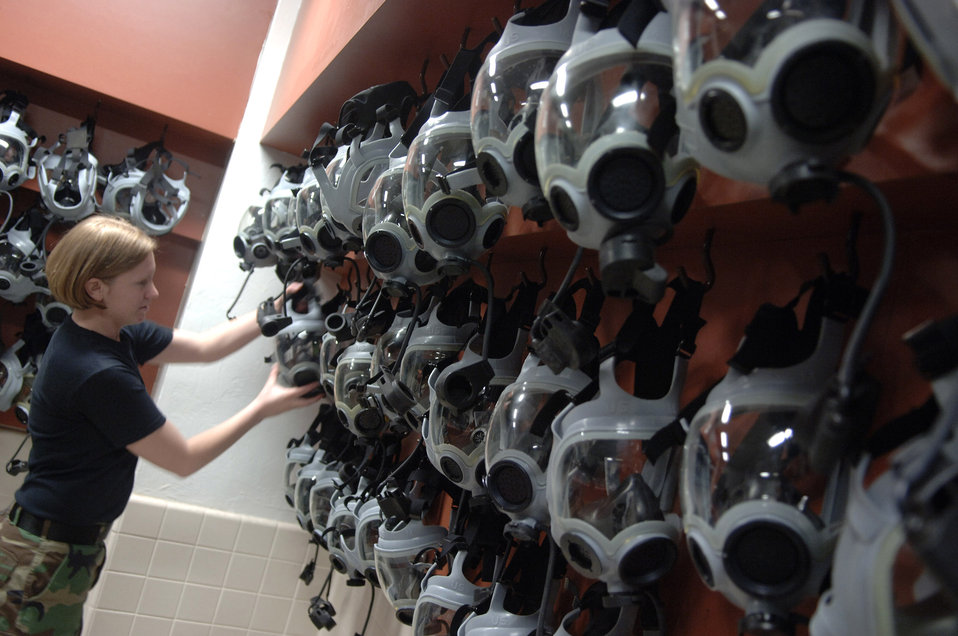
Supporting Bushwhacker

Airman Stephanie Walton hangs up gas masks to dry Jan. 20 during Phase 1 of Exercise Bushwacker 07-02 at Davis-Monthan Air Force Base, Ariz. Bushwacker 07-02 is an operational readiness exercise that tests the wing's deployment abilities. Airman Walton is assigned to the 355th Logistics Readiness Squadron.